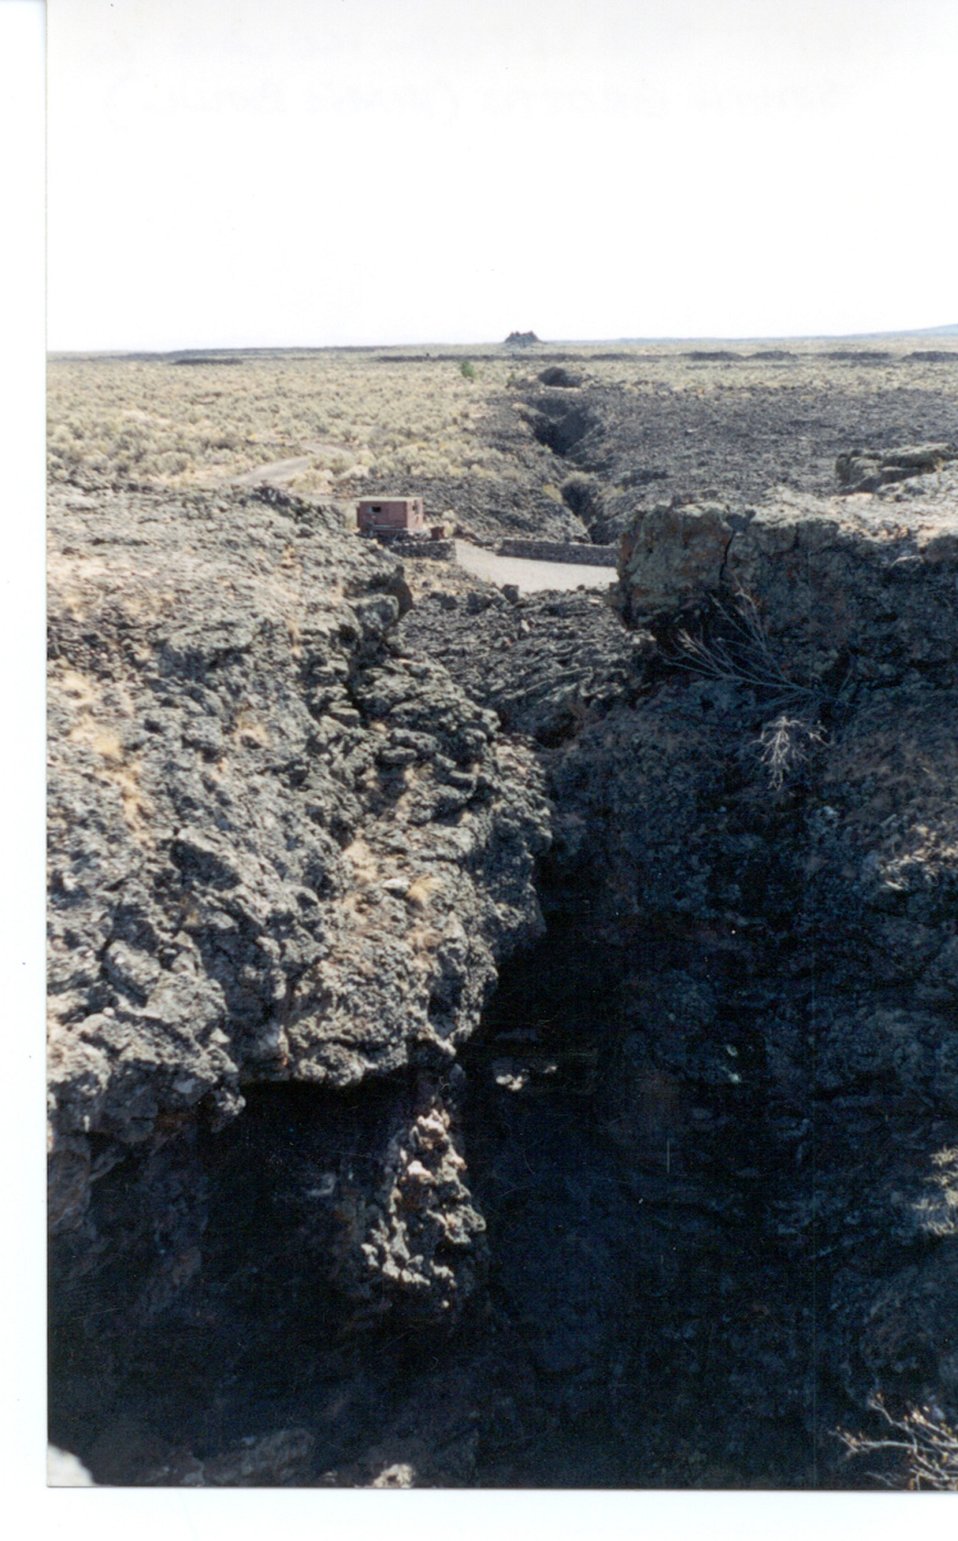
Great Rift Crystal Ice Cave in Kings Bowl Craters of the Moon Shoshone Field Office USRD Upper Snake River District